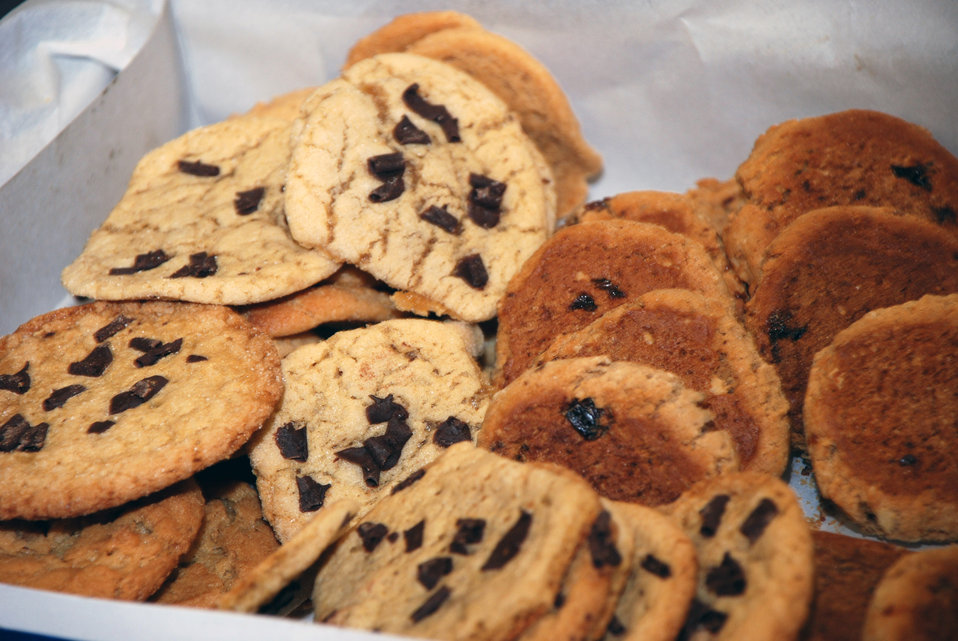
Bakers, baggers deliver sweet treats to dormitory Airmen

Chocolate chip cookies and a variety of other sweets for servicemembers are prepared to be delivered Dec. 16 at Peterson Air Force Base, Colo. The cookie drive, an annual program sponsored by the Peterson AFB Spouses' Club, collected more than 6,600 cookies for nearly 400 Airmen living in the dormitories.